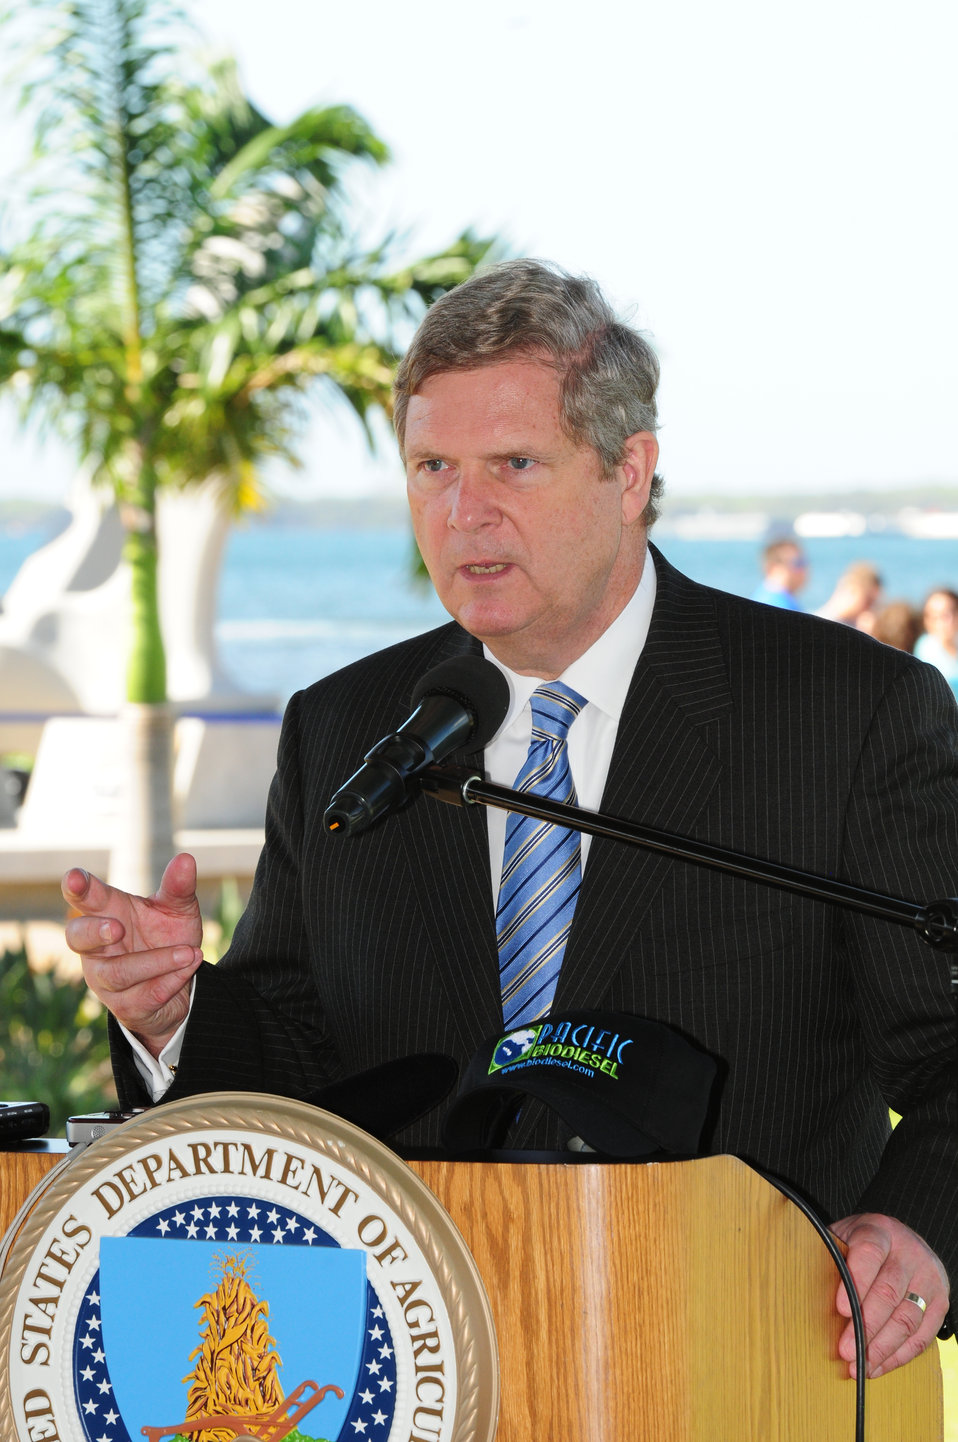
Agriculture Secretary Tom Vilsack highlights the Obama Administration's commitment to renewable energy at the.World War II Valor in the Pacific National Monument's Pearl Harbor Visitor Center. Pearl Harbor naval base was the first Hawaii military marine fleet to use biodiesel, replacing the Department of Navy-operated tour boats that shuttled visitors to and from the USS Arizona Memorial with five new boats capable of running on 100% biodiesel. Near Honolulu, HI, on Tuesday, January 10, 2012.